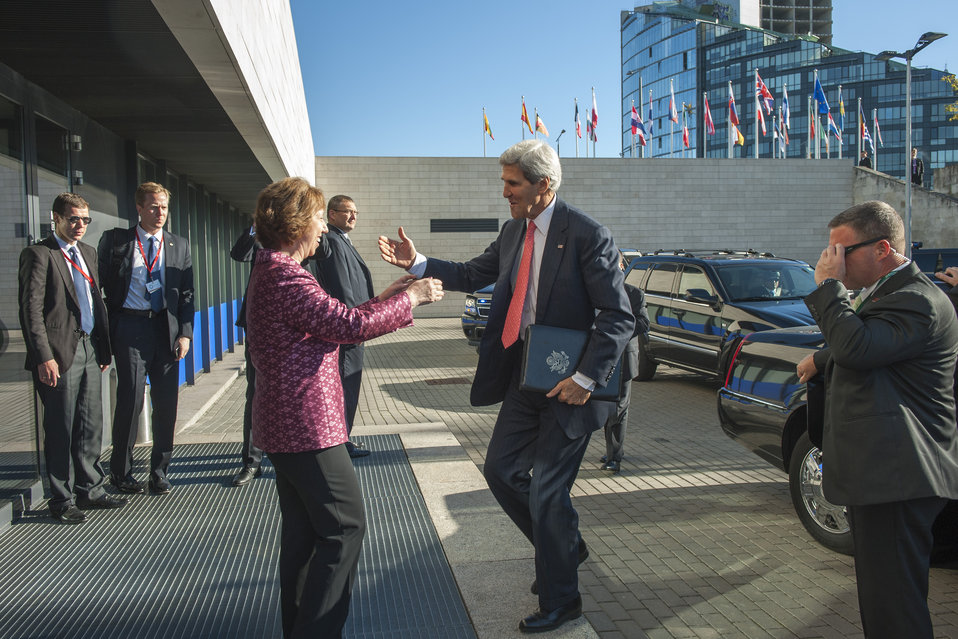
Secretary Kerry Greets EU High Representative Ashton

U.S. Secretary of State John Kerry greets EU High Representative Catherine Ashton before a meeting of EU Foreign Ministers in Vilnius, Lithuania on September 7, 2013.